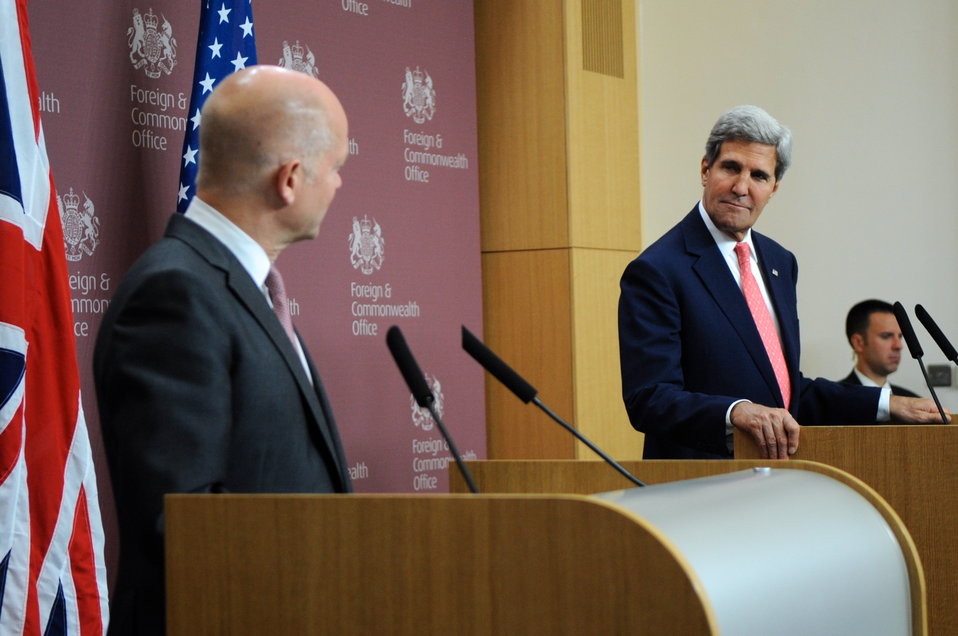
Secretary Kerry Delivers Remarks With British Foreign Secretary Hague

U.S. Secretary of State John Kerry delivers remarks with British Foreign Secretary William Hague during a news conference in London, United Kingdom on September 9, 2013.